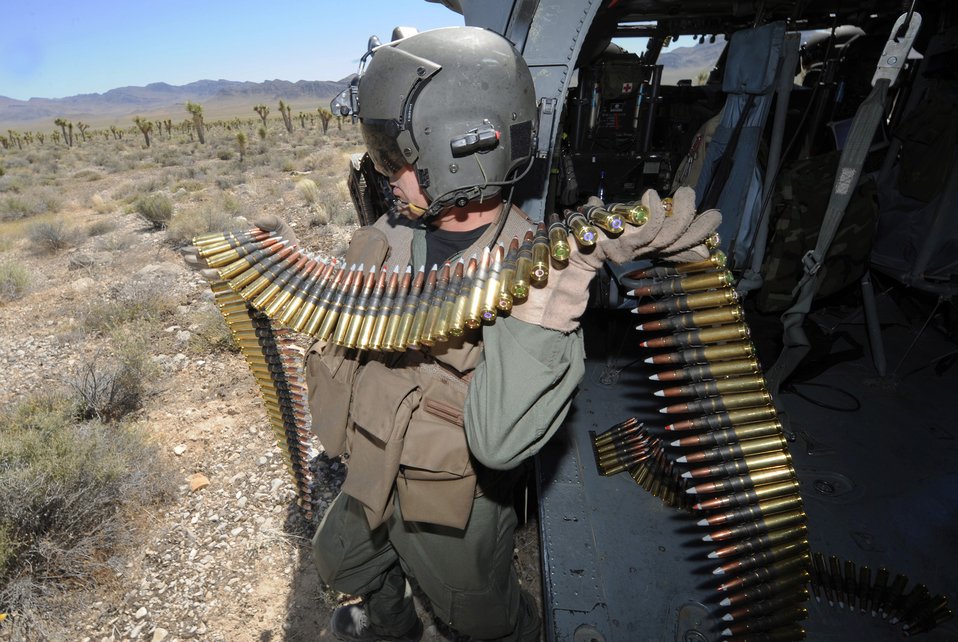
California Guard participates in firing mission

Staff Sgt. Andrew Gibson carries .50- caliber machine gun ammo to reload from an HH-60 Pave Hawk during a fixed forward firing mission on the Nevada Test and Training Range June 25, 2010. Sergeant Gibson is a flight engineer assigned to the California Air National Guard's 129th Rescue Squadron at Moffett Field, Calif.